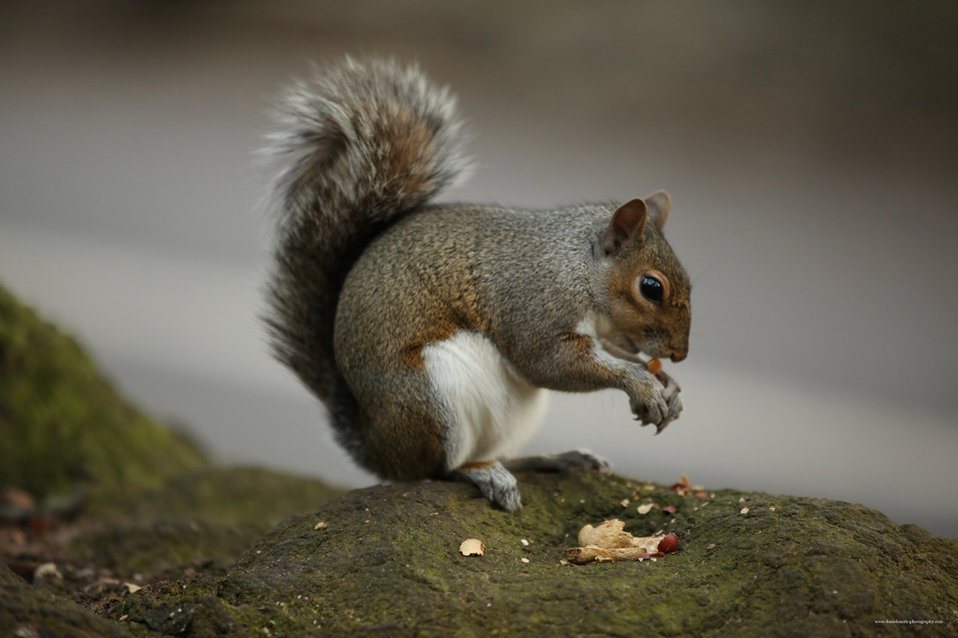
Squirrel eating nut

A squirrel eating a nut whilst sat on a tree at ground level..